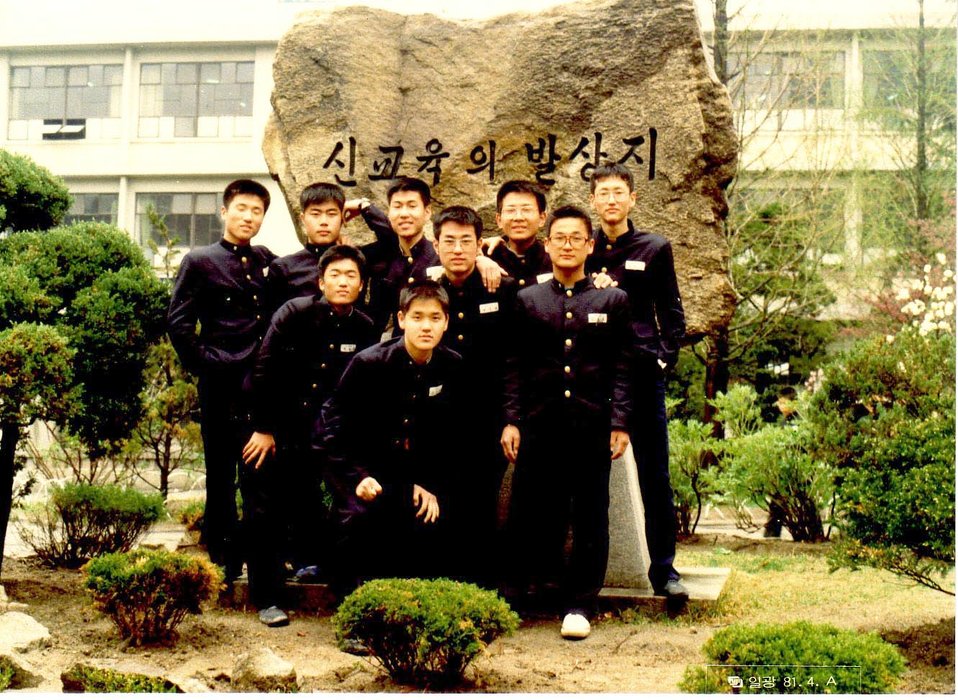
Liberty, freedom: An Airman's journey

SEOUL, South Korea -- Chaplain (Capt.) Jin Choi (back row, second from right) poses with classmates at Pai Chai High School here. Chaplain Choi grew up here and immigrated to the United States with his parents when he was 19. He is a chaplain with the 5th Bomb Wing at Minot Air Force Base, N.D..